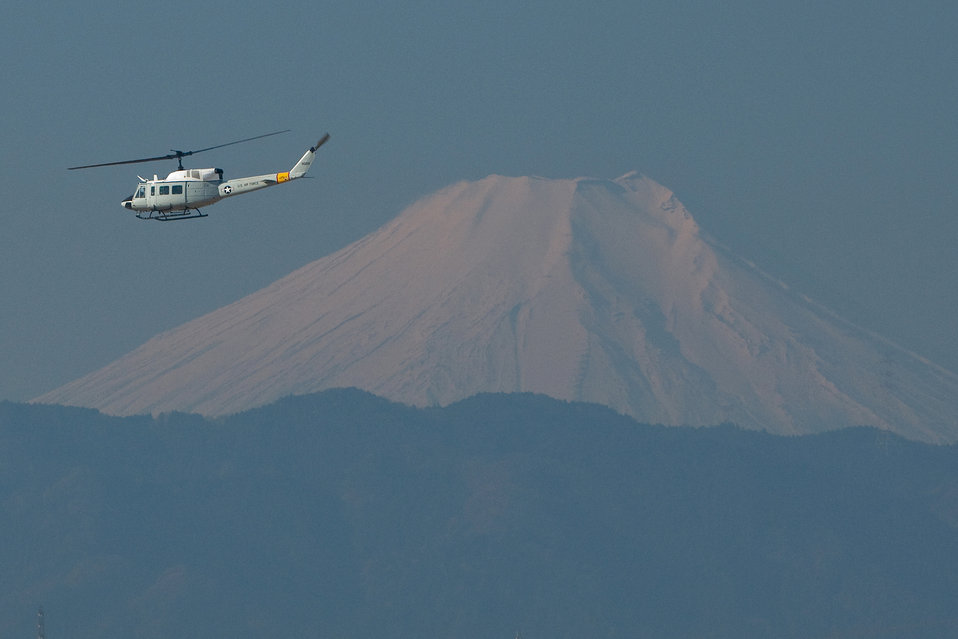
Emergency management exercise

A UH-1 Huey helicopter pilot participates in an emergency management exercise Feb. 4, 2011, at Yokota Air Base, Japan.